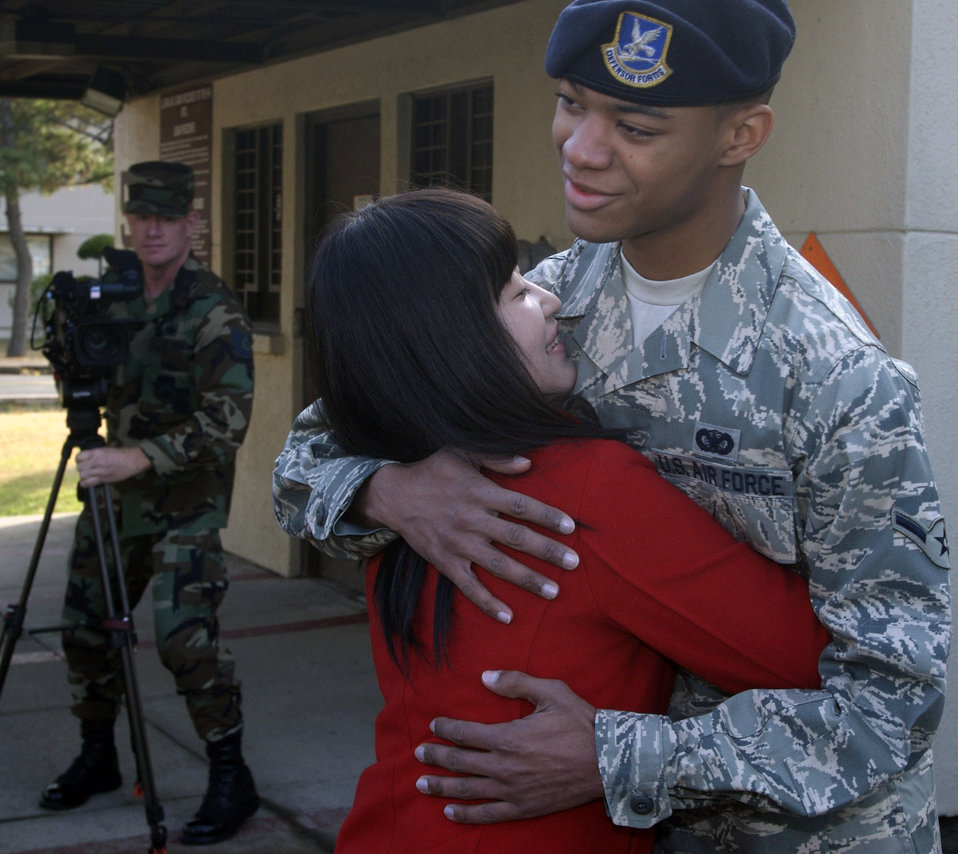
Lifesaving Airman, patient meet for first time

You Jin Pak gives Airman Tamarias Pope a hug as they meet for the first time Nov. 21 at Kunsan Air Base, South Korea. Airman Pope donated AB negative blood , which is rare among the South Korean population and specifically for Ms. Pak. The blood he donated ultimately saved her life. Airman Pope is assigned to the 8th Security Forces Squadron.